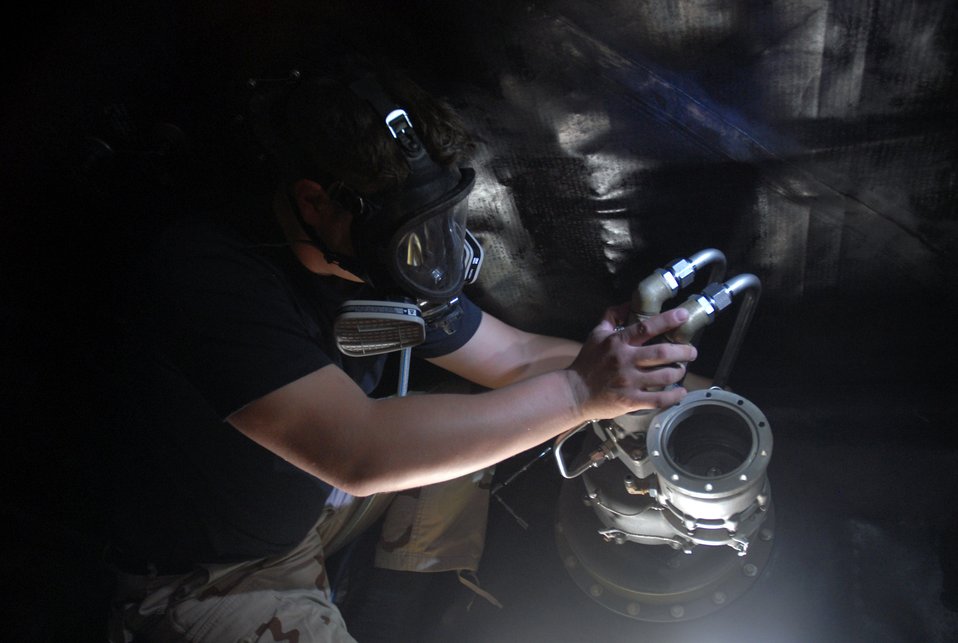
Pump it up: Airman goes with the flow

Wearing protective equipment in case of fuel fumes, Airman 1st Class Shaun Carrig installs an air refueling pump in the number three forward body fuel tank of a KC-135 Stratotanker Nov. 17 in Southwest Asia. The new fuel pump with ensure better gas flow for the aircraft. Airman Carrig is a fuel systems journeyman with the 379th Expeditionary Aircraft Maintenance Squadron and is deployed from Grand Forks Air Force Base, N.D.